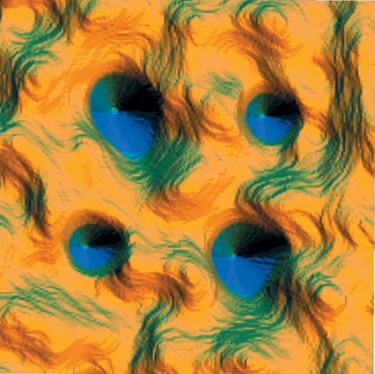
Scanning Tunneling Microscope Structure

Structure made with a scanning tunneling microscope at the NIST Nanoscale Physics Facility. The larger blue peaks are pairs of cobalt atoms, while the two smaller peaks are single cobalt atoms. The swirls on the copper surface illustrate how the cobalt and copper electrons interact with each other.